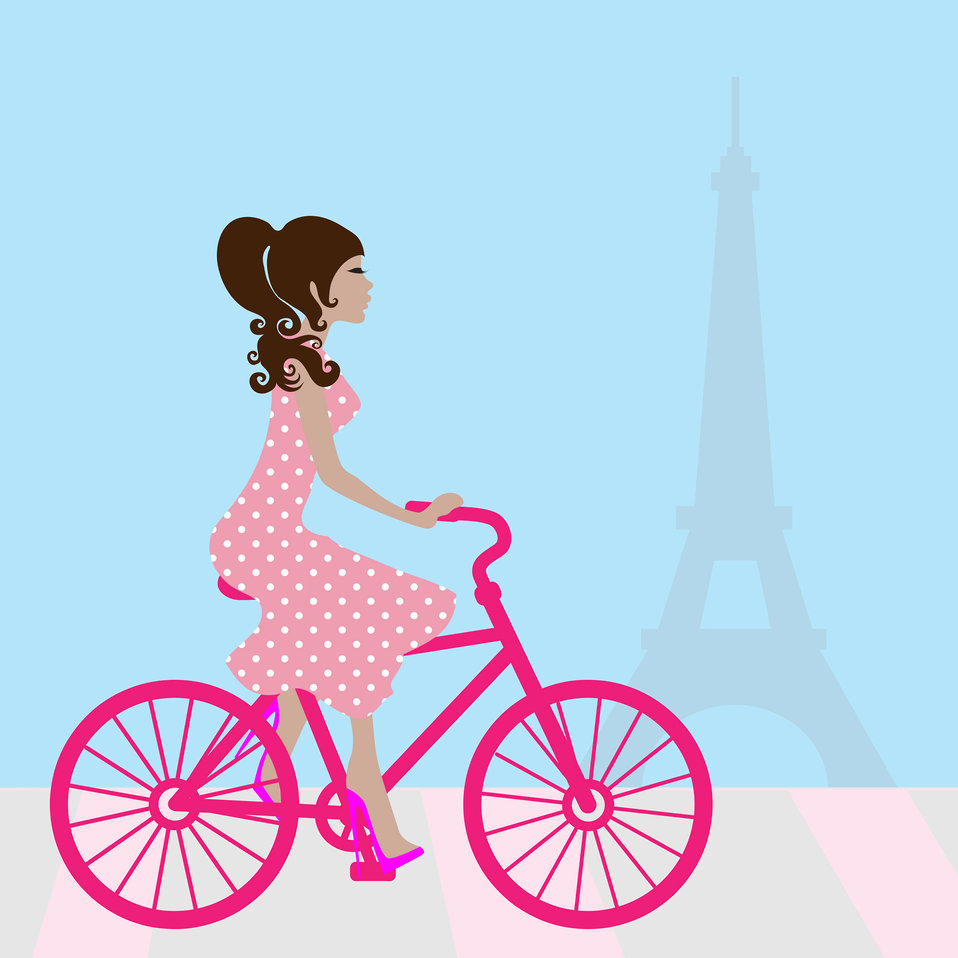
Girl cycling in paris

Beautiful girl on pink bike cycling in paris.